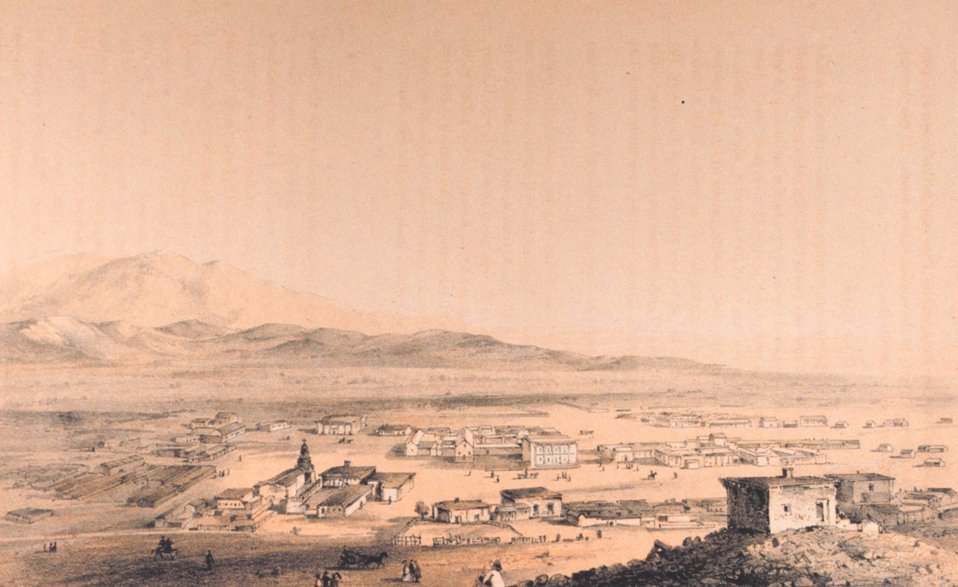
Los Angeles, Plate X. In: Reports of Explorations and Surveys .... Vol. 5, p. 35. Commonly known as Pacific Railroad Surveys. Call Number F593 .U58.